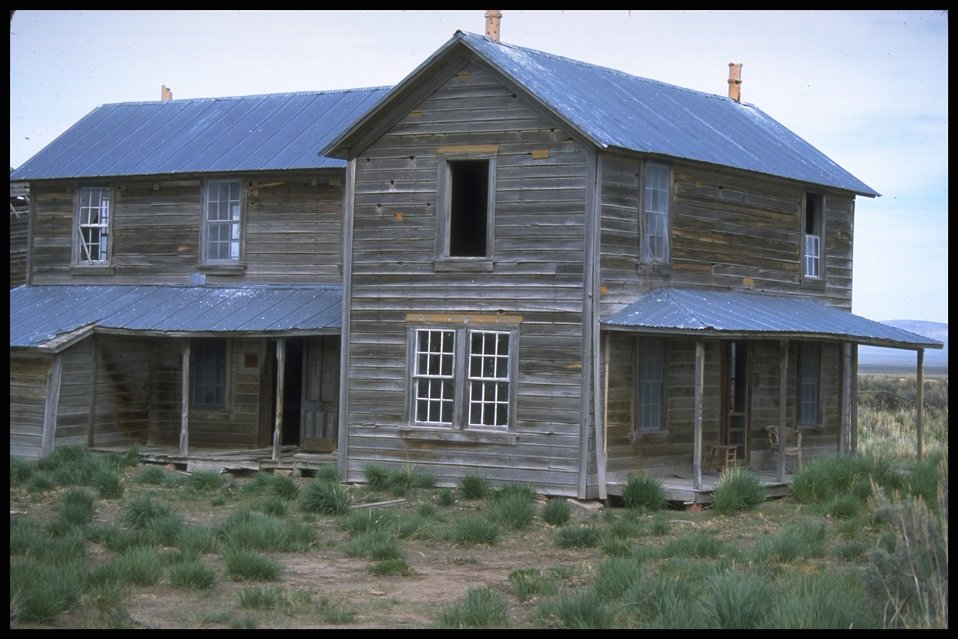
Abandoned ranch house at Shirk Ranch, Lakeview District.